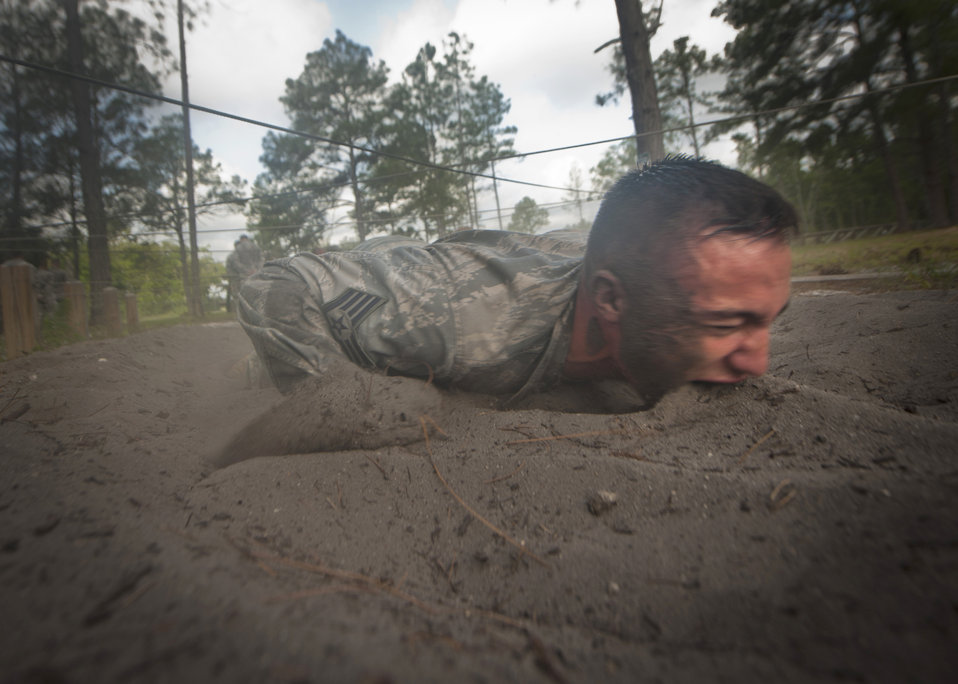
Getting low and dirty

Staff Sgt. Jonathan Smith gets a mouthful of dirt while low-crawling through sand April 27, 2011, during a training exercise at Camp Blanding, Fla. Sergeant Smith is the NCO in charge of training for the 820th Combat Operations Squadron at Moody Air Force Base, Ga.